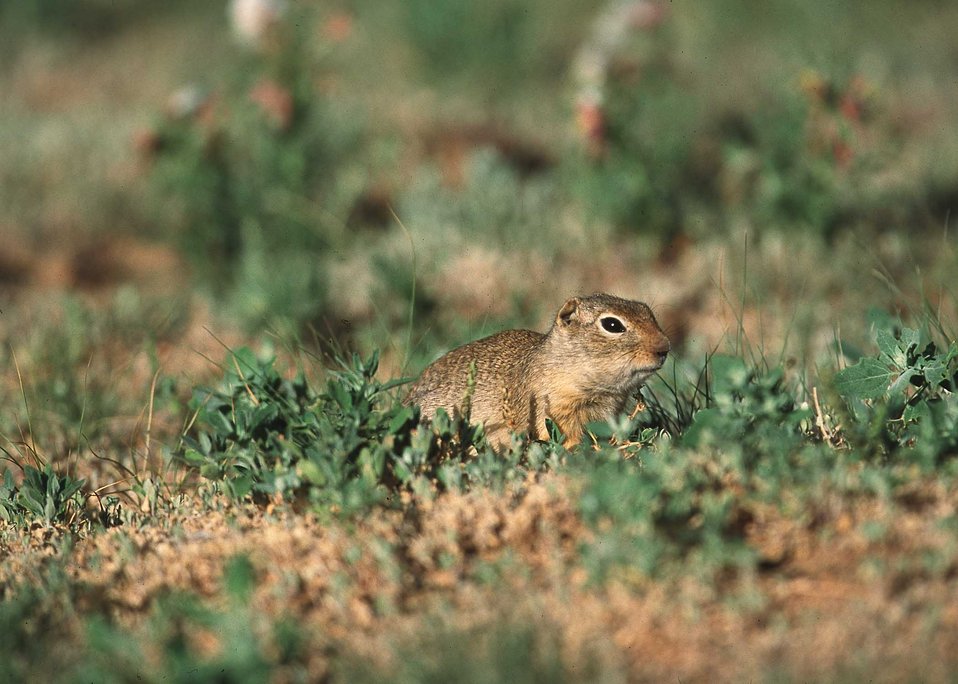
Rock Squirrel on FT Ranch.